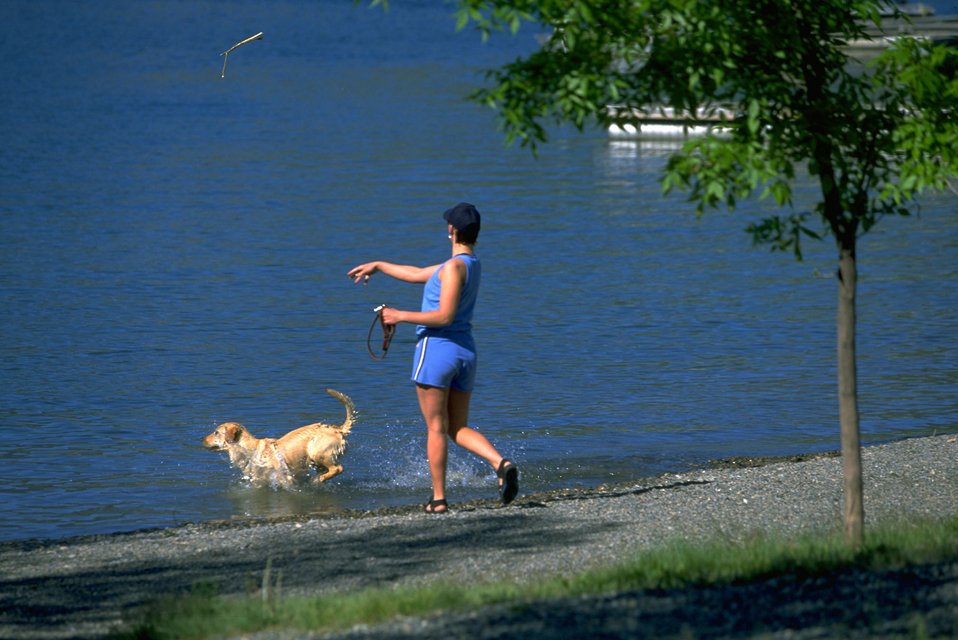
Woman playing fetch with dog in Holter Lake